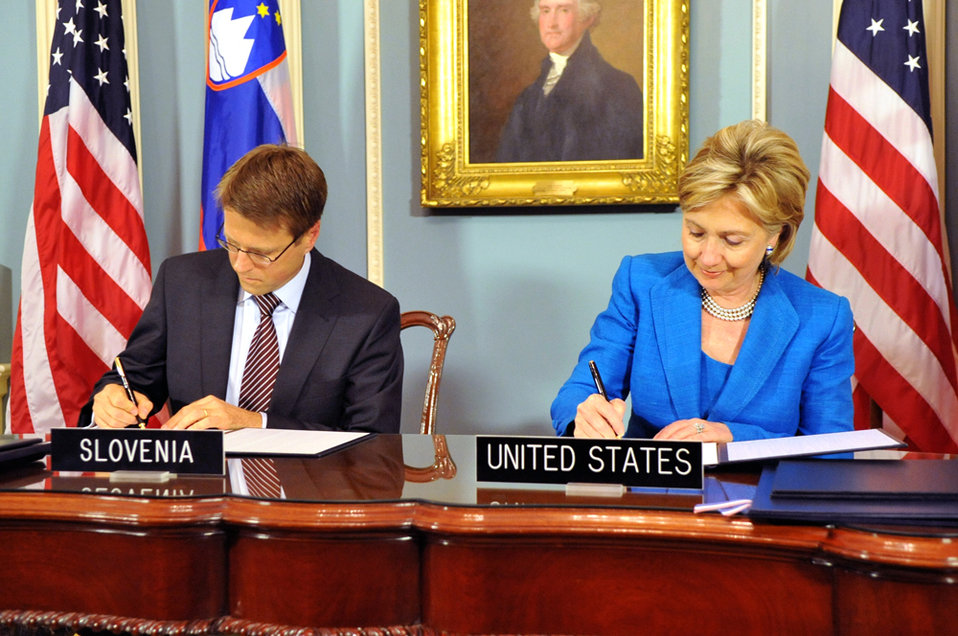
U.S.-Slovenia Signing Ceremony

Secretary Clinton participates in a signing ceremony of Protocols of Exchange of Instruments of Ratification for the U.S.-Slovenia Mutual Legal Assistance Protocol and the U.S. Slovenia Extradition Treaty, with His Excellency Samuel Zbogar, in the Treaty Room of the U.S. Department of State in Washington, DC July 29, 2009.